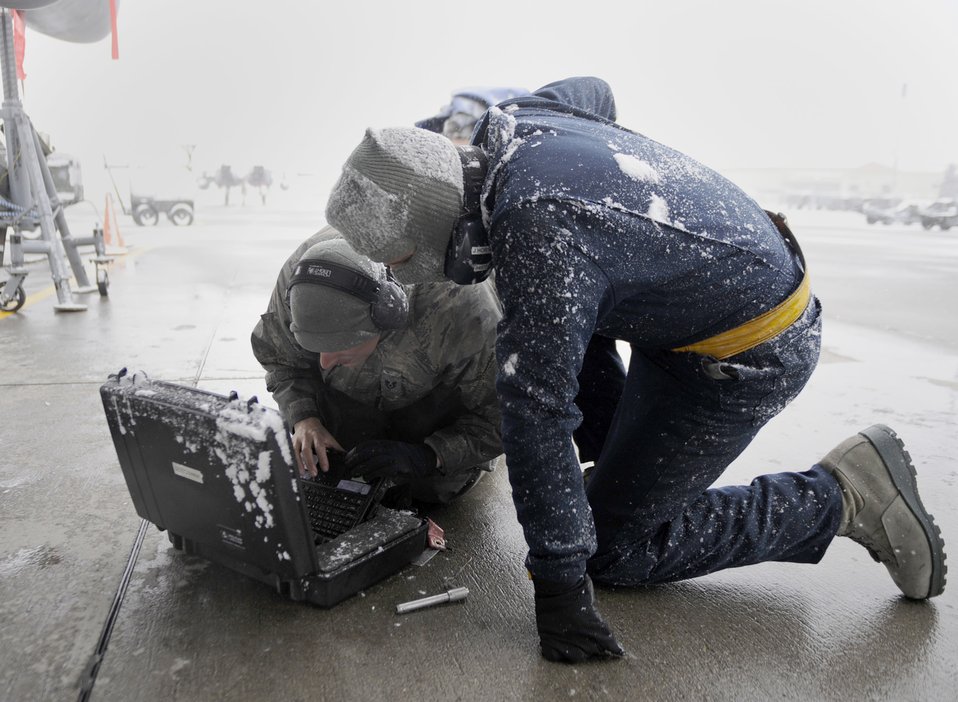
Airmen work under harsh weather conditions

Staff Sgt. Robert Kier and Airman 1st Class James Horton check the technical orders on an F-15E Strike Eagle during an exercise Nov. 21, 2010, on the flightline at Mountain Home Air Force Base, Idaho. Wing officials use operational readiness exercises to gauge the wing's ability to meet wartime taskings at a deployed location. The evaluation includes initial response, readiness, combat operations, ability to survive and operate, self aid and buddy care, and mission support. Both Sergeant Kier and Airman Horton are assigned to the 391st Fighter Squadron as crew chiefs.